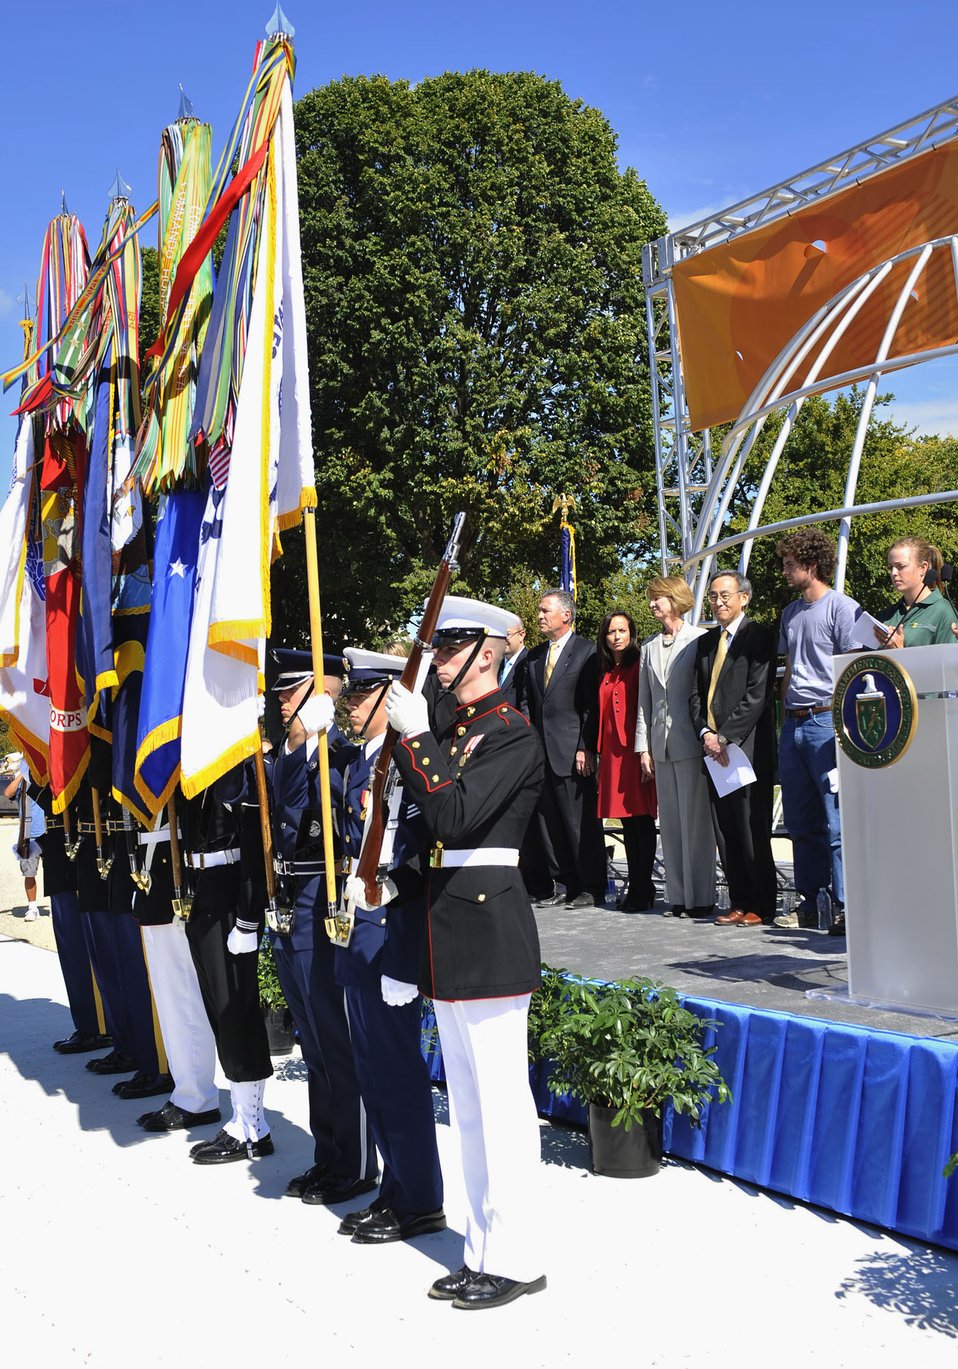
Solar Decathlon 2009 on the National Mall, with Sec. Chu

Solar Decathlon 09